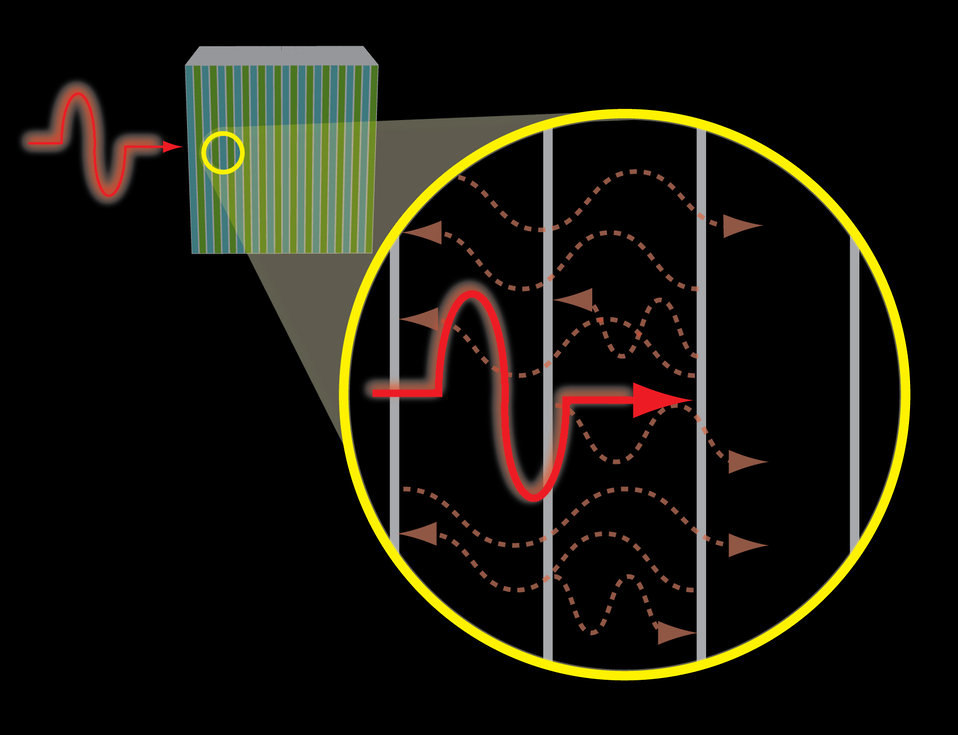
Photons; Faster-than-light

At the boundaries between layers, the photon creates waves interfering with each other, affecting its transit time.